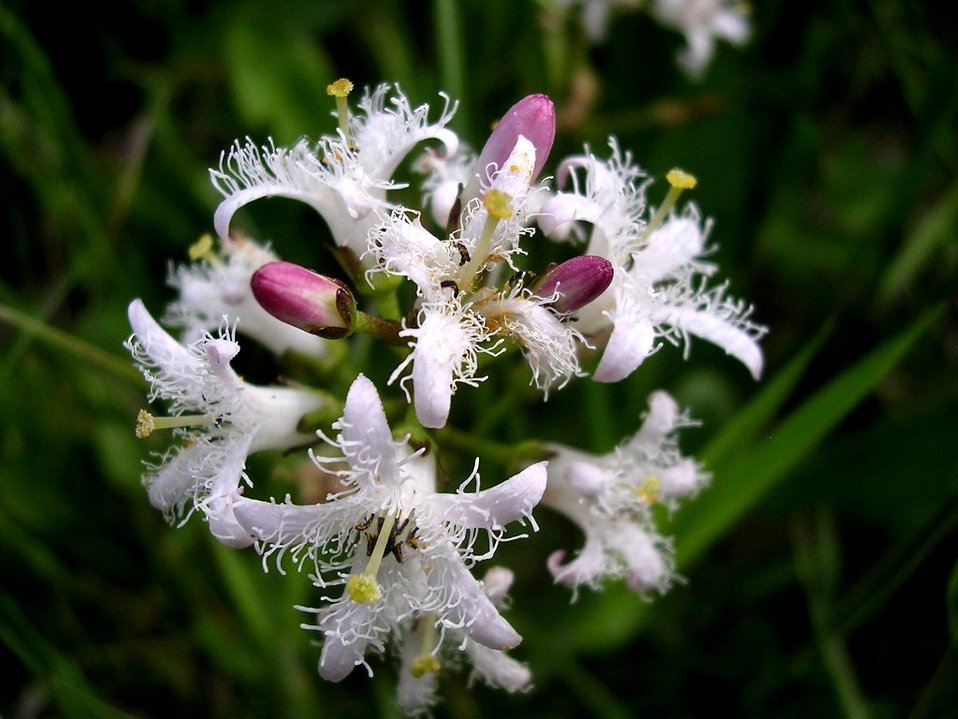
Čeština: Vachta trojlistá